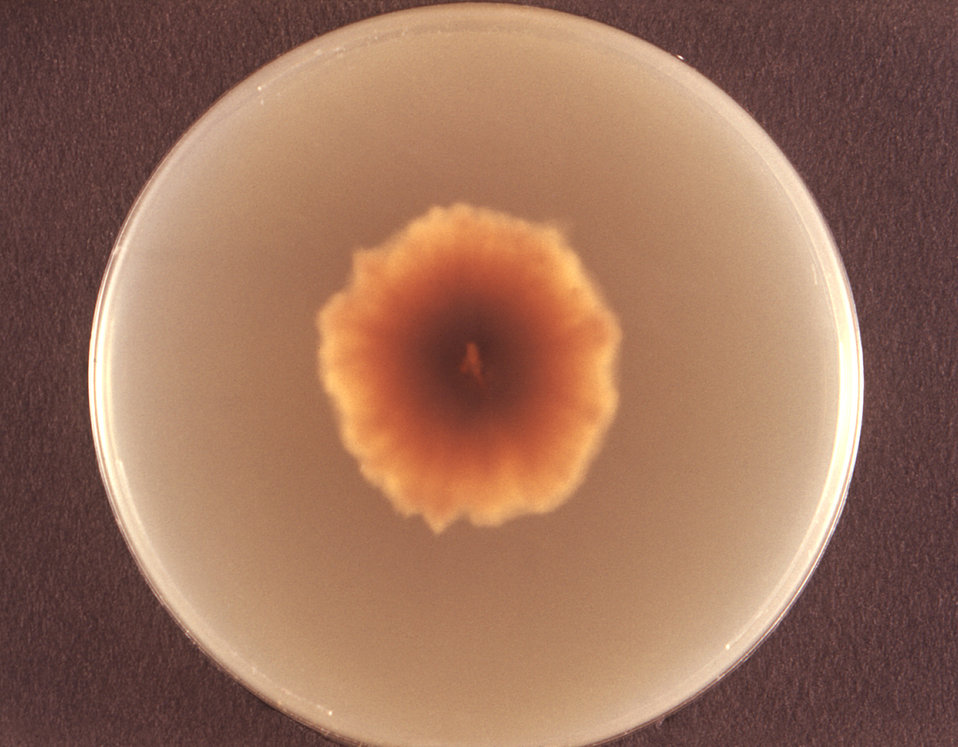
Viewed from the back, i.e., reverse, this image depicted a Petri dish containing Sabouraud's (SAB) dextrose agar, upon which a Microsporum persicolor fungal colony had been cultured. As seen in this reverse view, the colonial coloration can be yellow, or may even be a red-brown. From the front, as depicted in PHIL 10906, the colonies can be white, or depending upon the Microsporum sp., may run the gamut, sporting a yellow, beige or cinnamon color, and display a flat, or glabrous, woolly or powdery texture.